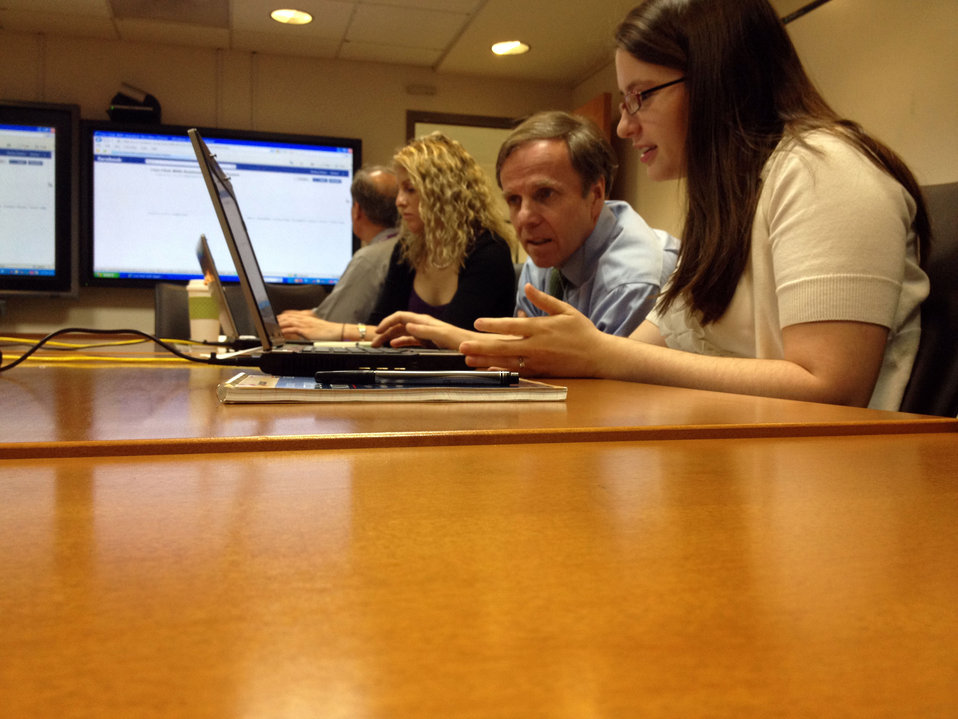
Assistant Secretary Posner Participates in a Live Facebook Chat

Assistant Secretary of State for Democracy, Human Rights and Labor Michael Posner responds to your questions live in a Facebook chat on May 25, 2012.